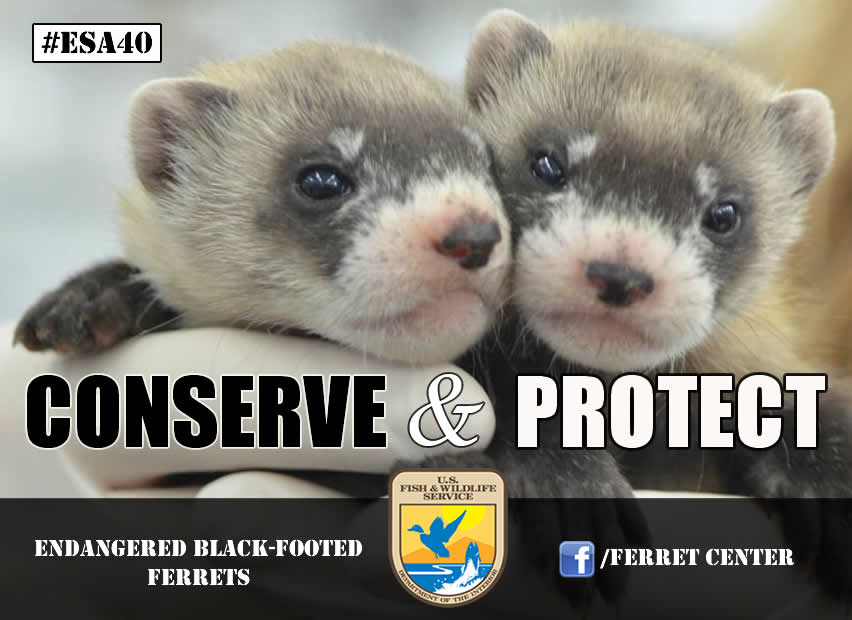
Conserve and Protect

The mission of the U.S. Fish and Wildlife Service is working with others to conserve, protect, and enhance fish, wildlife, plants and their habitats for the continuing benefit of the American people.

Photo: Endangered black-footed ferret kits at the National Black-footed Ferret Conservation Center in Colorado (www.blackfootedferret.org/).